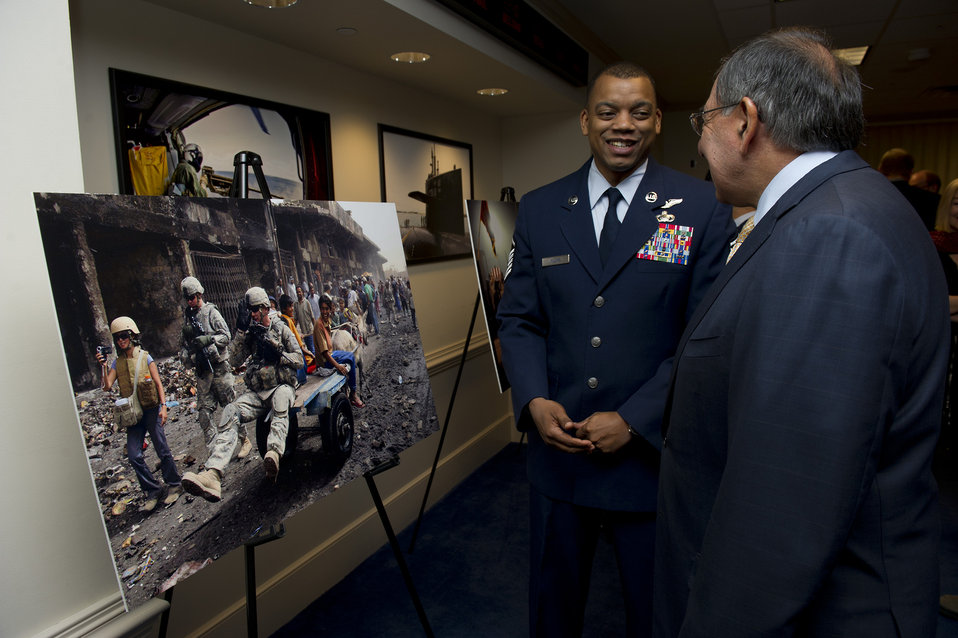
SecDef talks photography

Secretary of Defense Leon E. Panetta, right, speaks with Master Sgt. Cohen A. Young, about the story behind Cohen's award-winning photograph at the Art in Embassies best in show awards ceremony at the Pentagon, Nov 30, 2012. Cohen is stationed at Shaw Air Force Base, S.C.